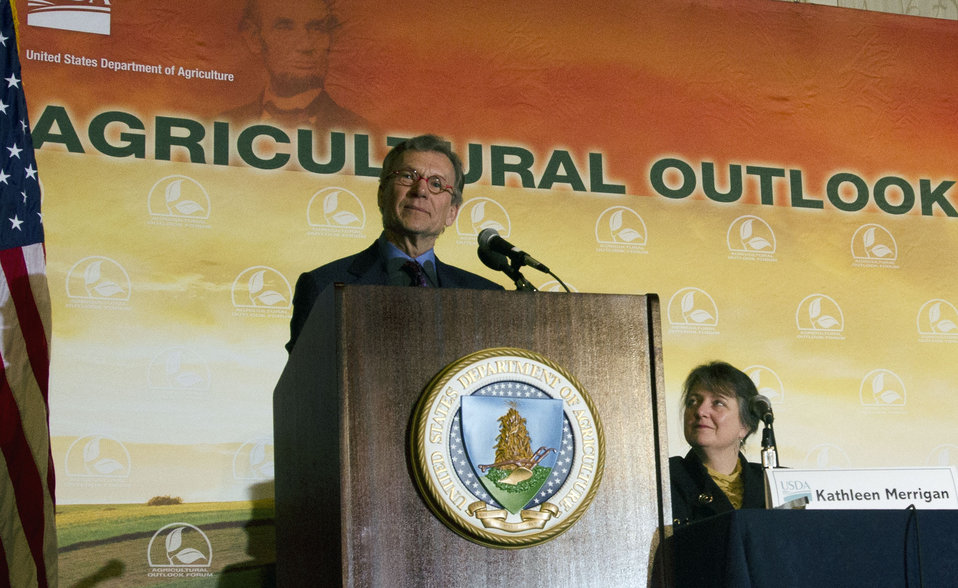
Former U.S. Senator from South Dakota Thomas A Daschle and Senior Policy Advisor, DLA Piper speaking on Plowing Ahead: Farming, Food Security, and the Future as the Distinguished Guest Speaker at the Opening session of the 2013 Agriculture Outlook Forum, in Arlington, VA, on Thursday, February 21, 2013 as Agriculture Deputy Secretary Kathleen Merrigan looks on.